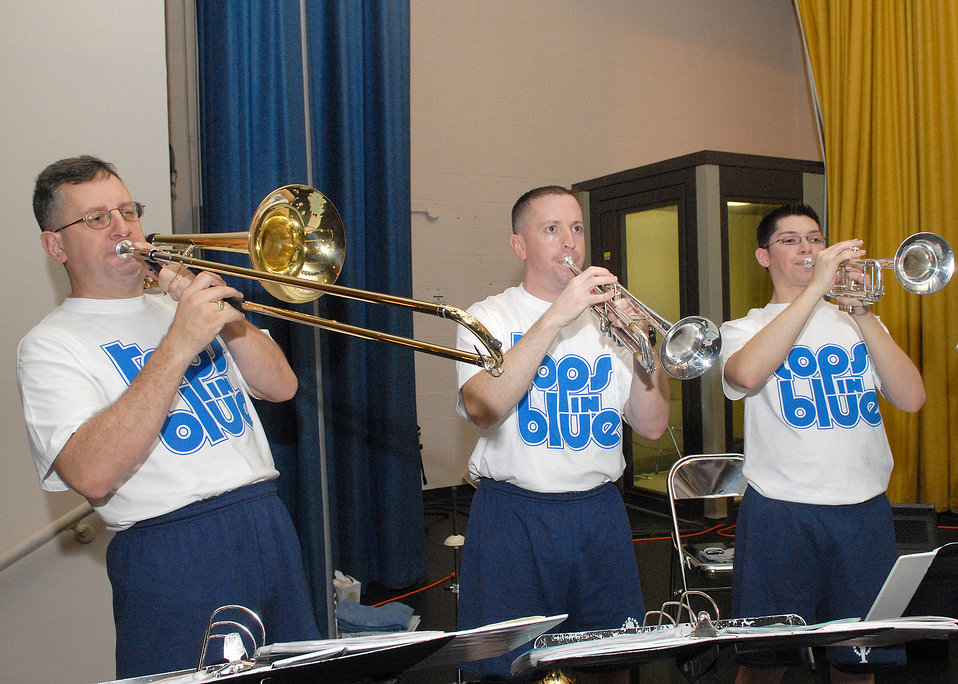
Tops In Blue 2007 rehearses for anniversary season

Tops in Blue 2007 cast members rehearse in their production center Feb. 7 at Lackland Air Force Base, Texas. This year's theme is